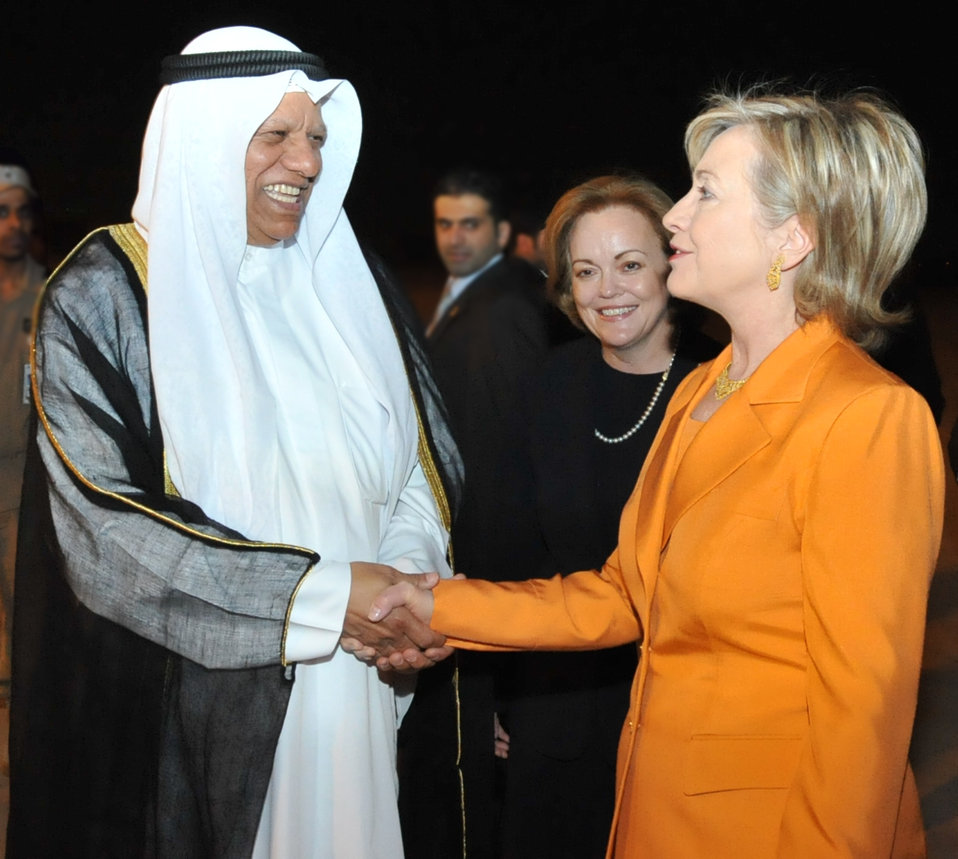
Secretary Clinton Arrives in Kuwait

U.S. Secretary of State Hillary Rodham Clinton arrives in Kuwait to a welcome from U.S. Ambassador to Kuwait Deborah K. Jones (right) and Kuwaiti Minister of Foreign Affairs Ambassador Ali Al-Sammak (left) in Kuwait City, Kuwait April 24, 2009.